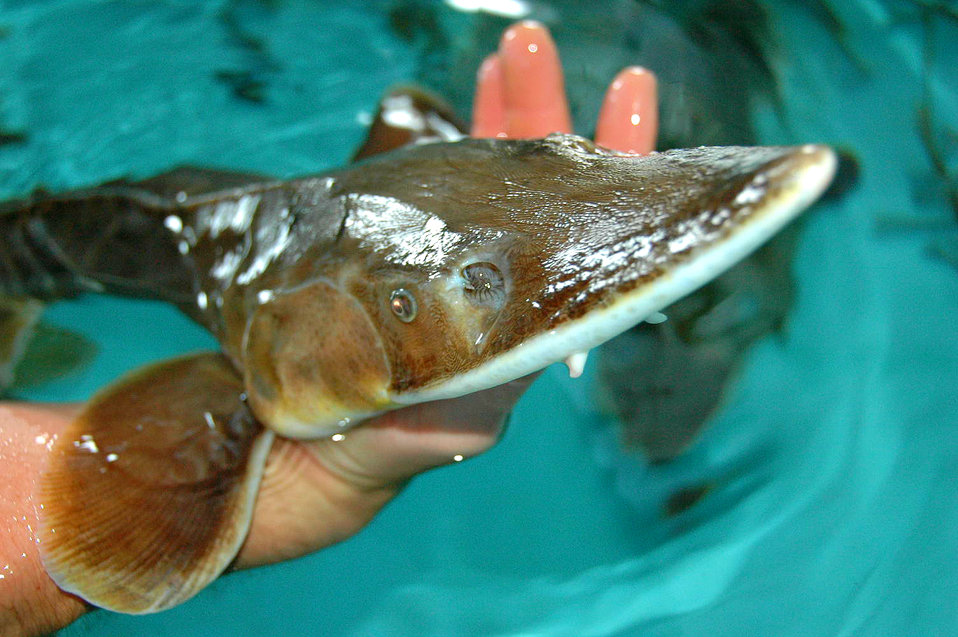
Shovelnose Sturgeon

You can see why they are called Shovelnose sturgeon! Click on the link below to find out how these guys are helping out they're closely related cousins the Pallid Sturgeon.
www.fws.gov/mountain-prairie/science/surrogate species.cfm